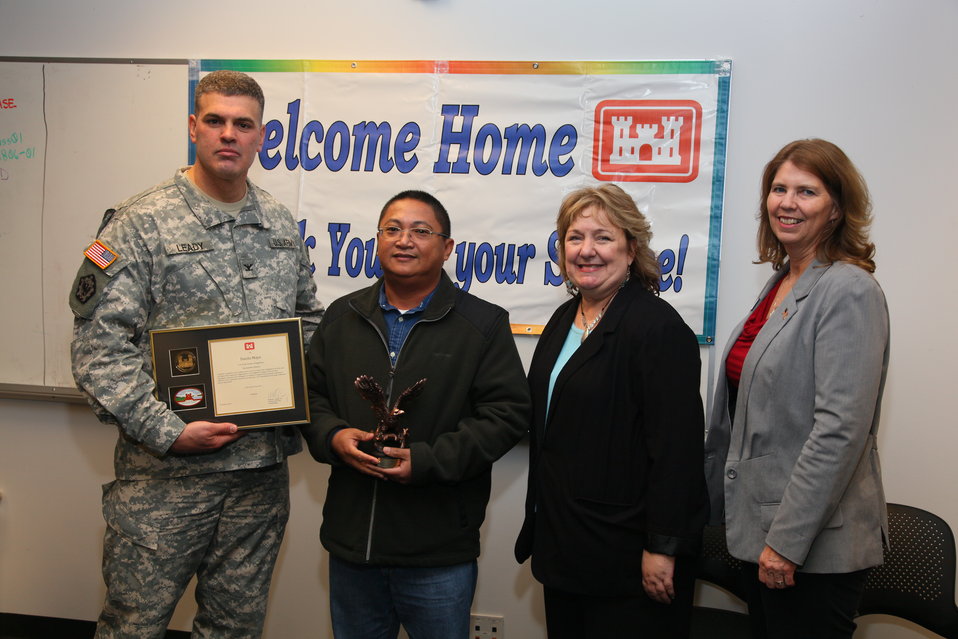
Sacramento District welcomes home Afghanistan volunteers

Sacramento District civil engineer Danilo Mayo receives an award from district commander, Col. Bill Leady, for his service in Afghanistan at a welcome-home ceremony in Sacramento, Calif., Jan. 13, 2012. Five district employees were honored for recent Overseas Contingency Operations service at the event. In 2011 alone, the district saw 27 employees volunteer for service in Overseas Contingency Operations.